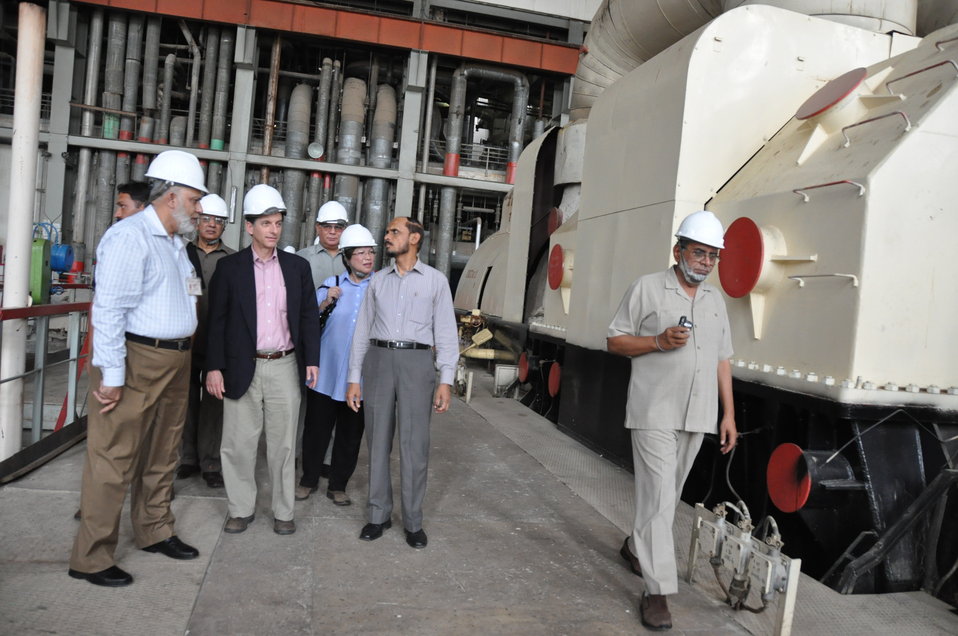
Muzaffargarh Thermal Power Station